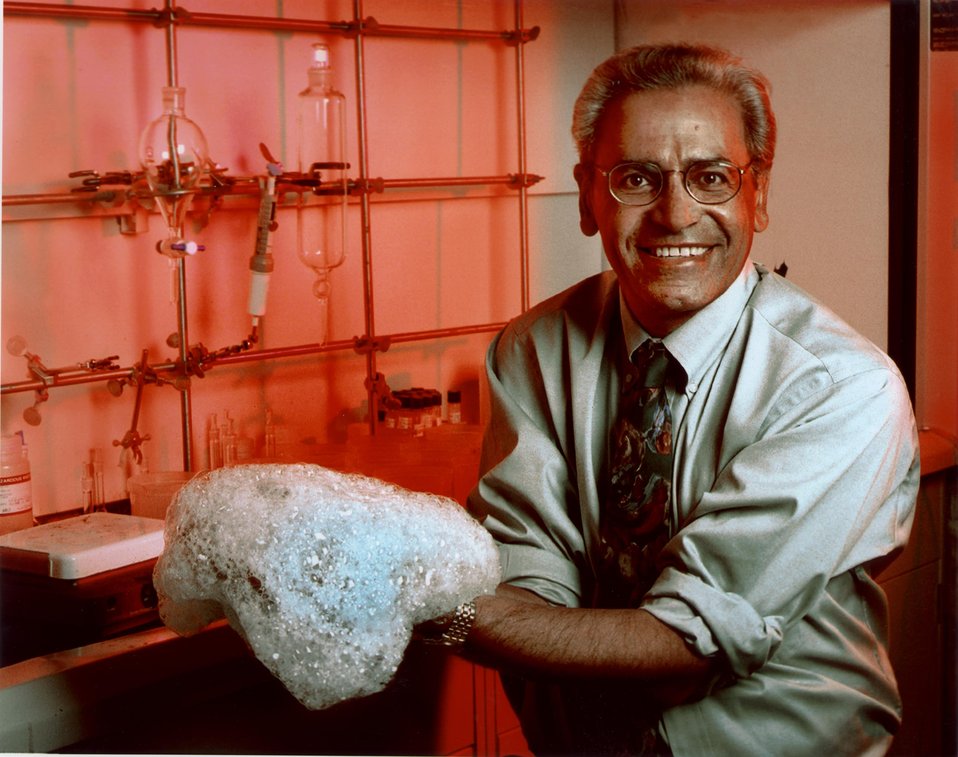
SANDIA SCIENTIST M. TADROS DISPLAYS HIS AWARD WINNING DECONTAMINATING FOAM FOR NEUTRALIZING CHEMICAL AND BIOLOGICAL AGENTS.

SANDIA'S MAHER TADROS DEVELOPED A DECONTAMINATING FOAM FOR CHEMICAL AND BIOLOGICAL WARFARE AGENTS WHICH IS ABLE TO NEUTRALIZE VIRAL, BACTERIAL, AND NERVE AGENTS IN MINUTES. THE PRODUCT WAS CHOSEN IN JUNE, 2000 TO RECEIVE A DISCOVER AWARD FOR TECHNOLOGICAL INNOVATION BY DISCOVER MAGAZINE.